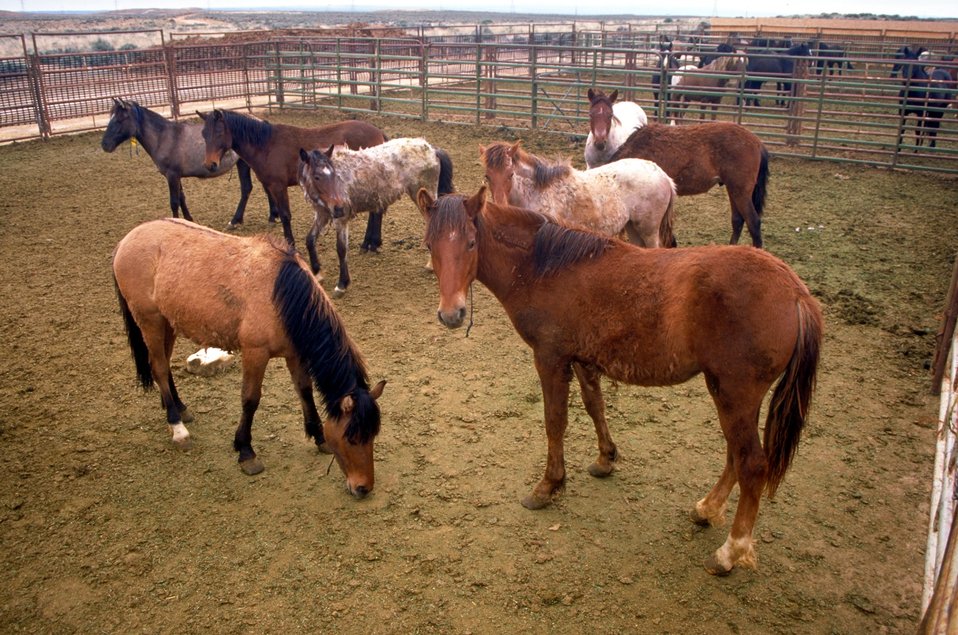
Holding pen near Vernal, Utah.